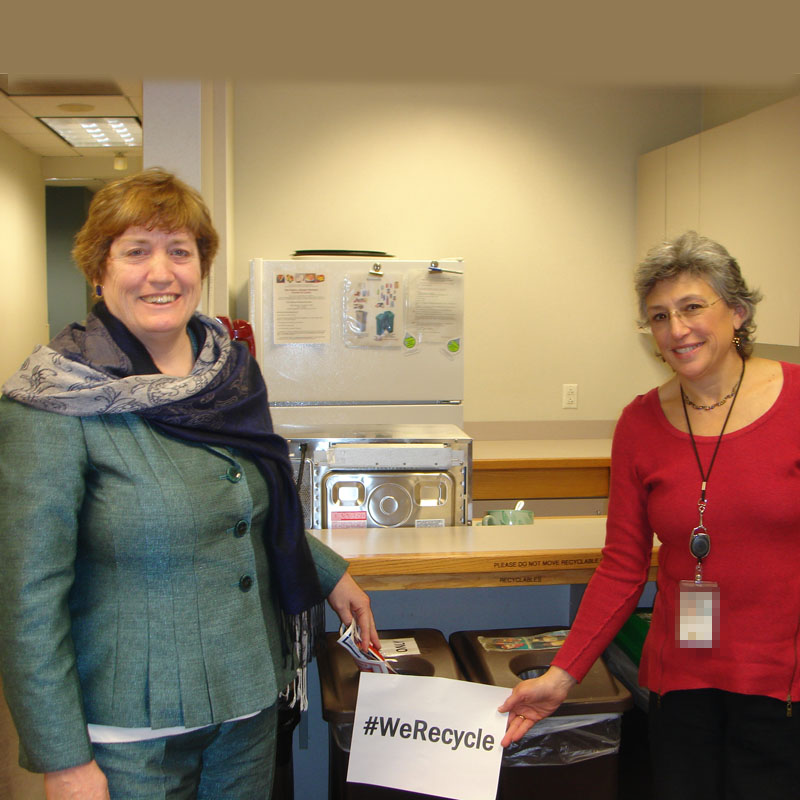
EPA Employees Lorna and Maryann Recycle

At EPA, #WeRecycle. Learn how you can too: www2.epa.gov/recycle